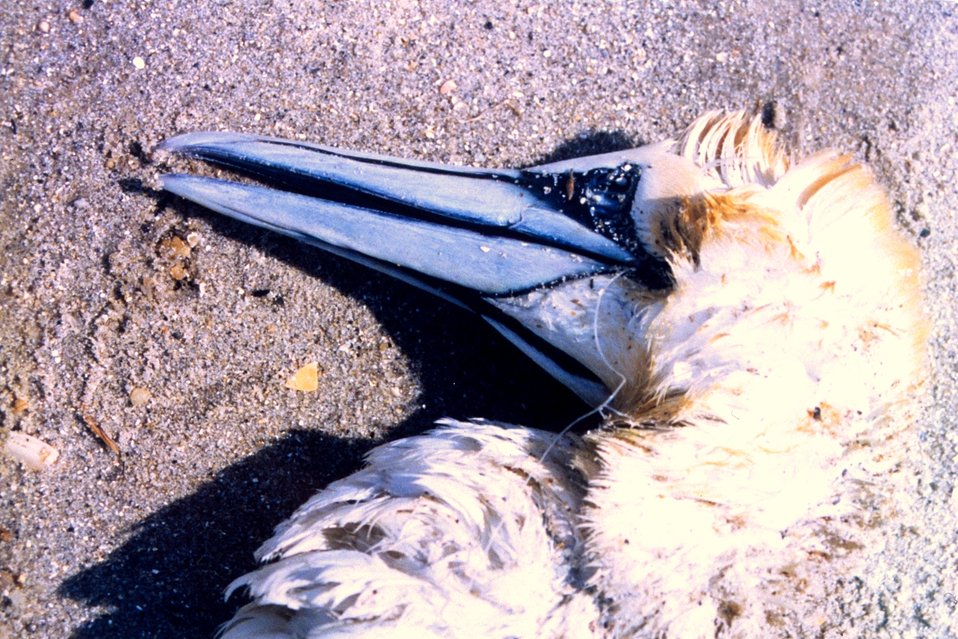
A Northern Gannet, somewhat north of its normal range, tangled in fishing line and drowned.